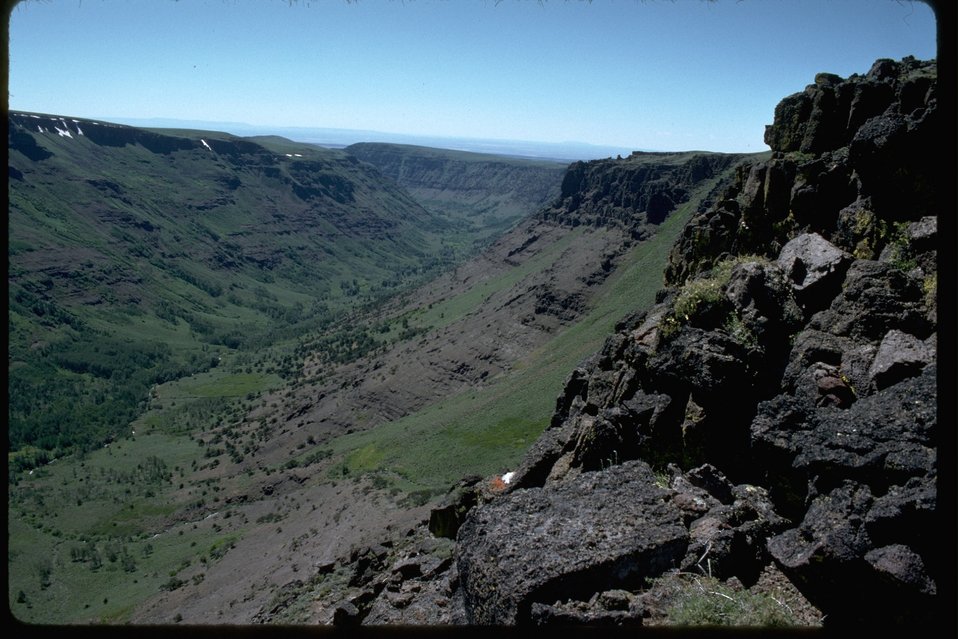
A view from the south rim of the Little Blitzen Gorge looking east up the canyon, just north of the Rooster Comb area.